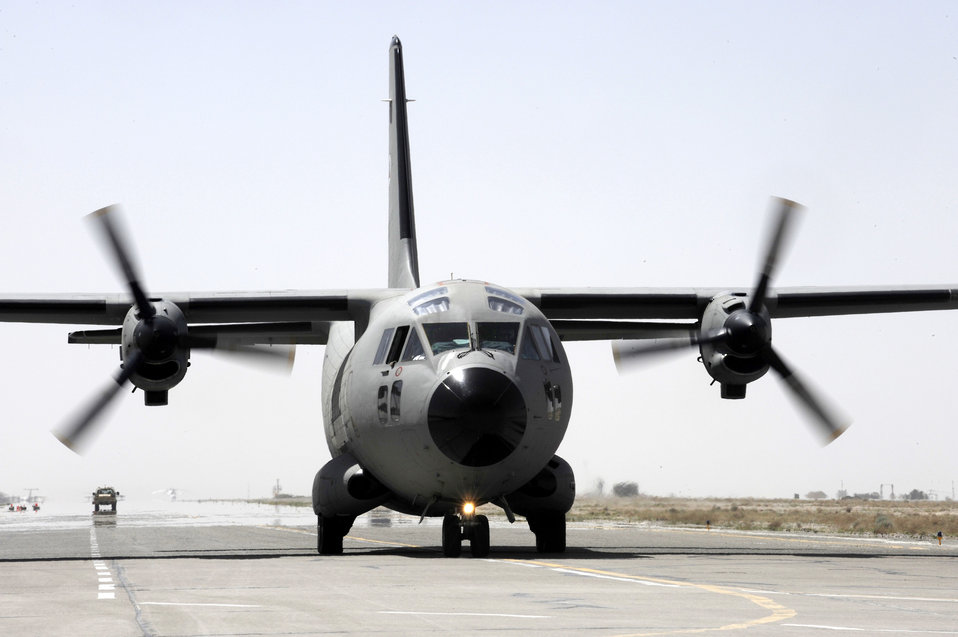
Afghan first flight

Lt. Col. James Piel, 538th Air Expeditionary Advisory Squadron commander, and Afghan National Army Air Corps 1st Lt. Faiz M. Ramaki fly their first operational mission in a C-27 Spartan March 24, 2010, at Kandahar Airfield, Afghanistan.